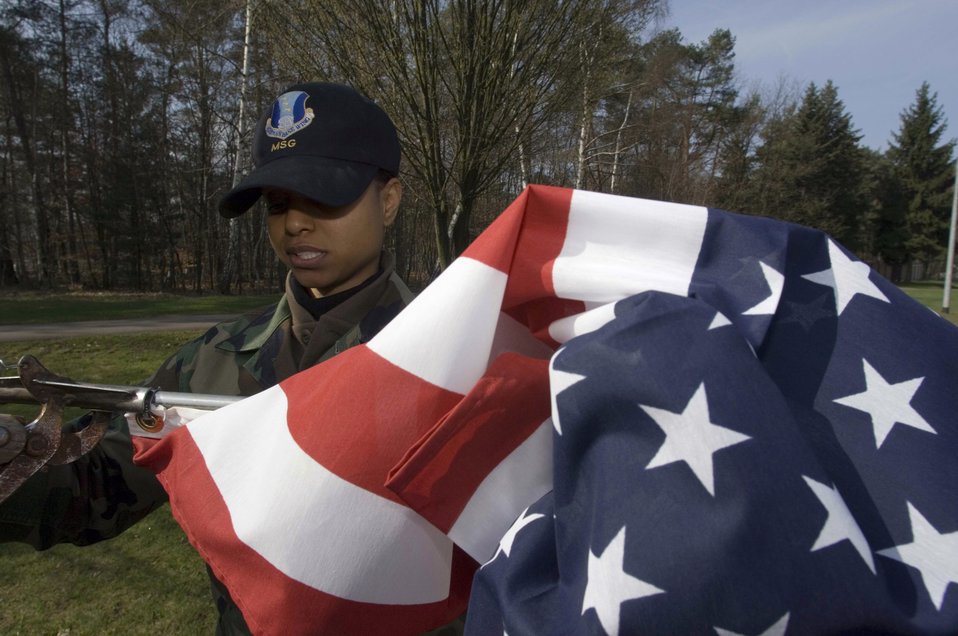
Posting the colors

Staff Sgt. Davidad Langley unfurls a new flag for posting on the main drive at Ramstein Air Base, Germany, on Wednesday, April 19, 2006. Officials replace older flags periodically as part of the installation excellence program. Sergeant Langley is a base information manager with the 435th Communication Squadron.